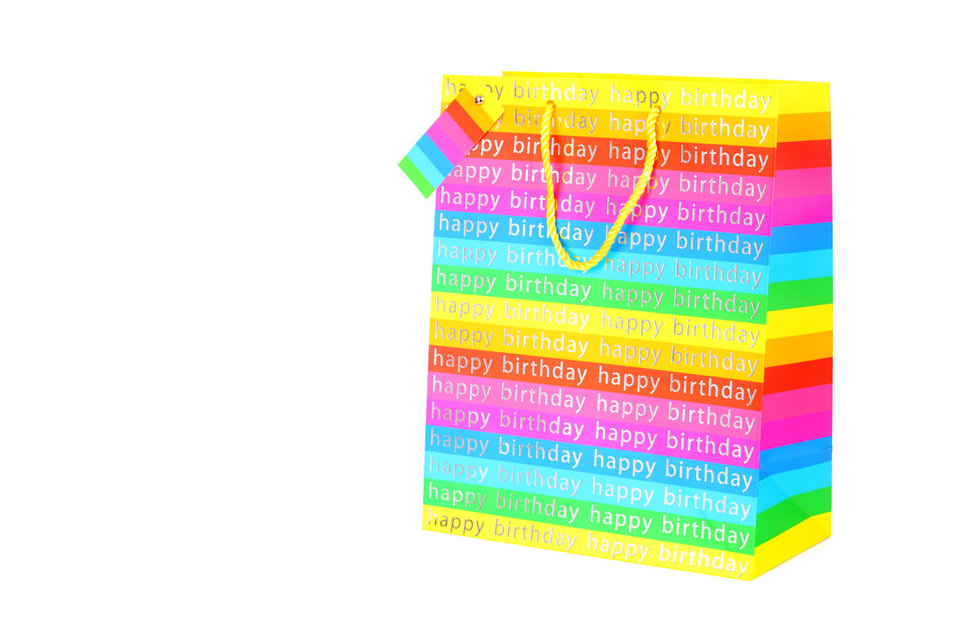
Gift bag

Colorful birthday gift bag isolated on white background.